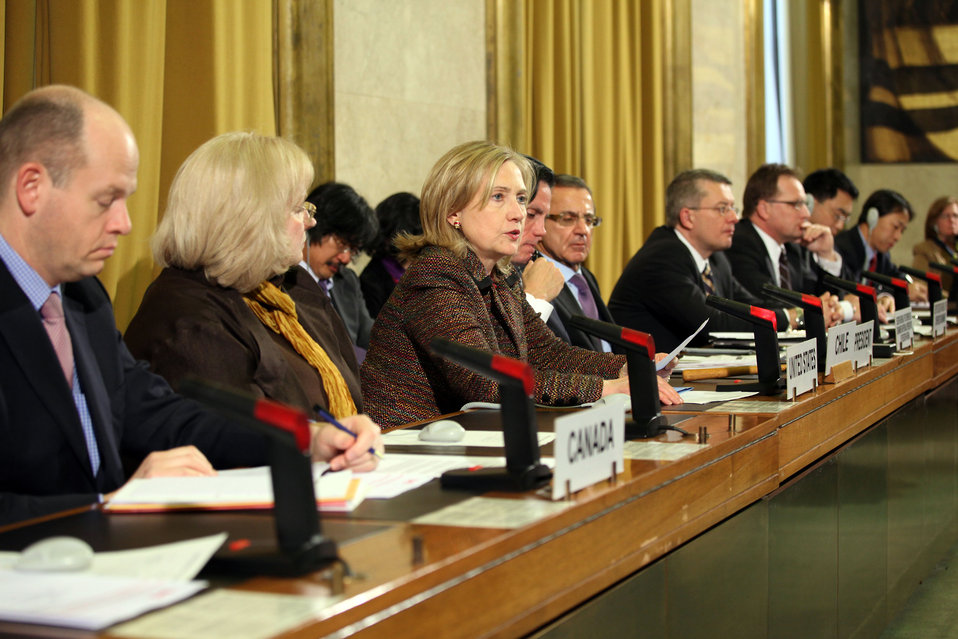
Secretary Clinton Addresses the Conference on Disarmament

U.S. Secretary of State Hillary Rodham Clinton addresses the Conference on Disarmament at the United Nations Office at Geneva, Switzerland, on February 28, 2011.